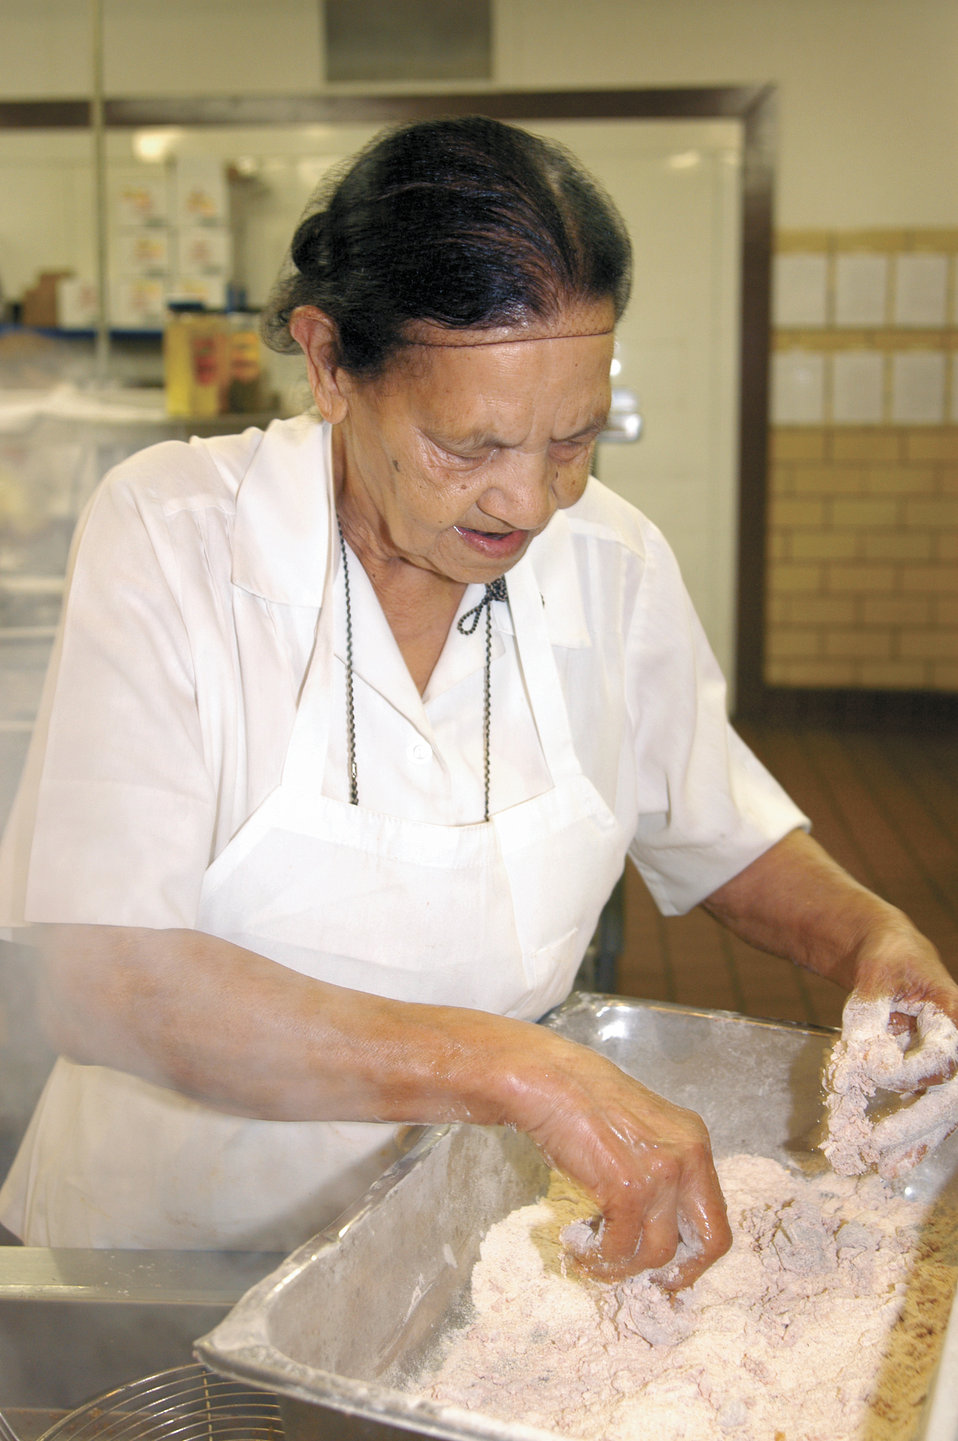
Cook still going strong after 50-plus years of service

TINKER AIR FORCE BASE, Okla. -- Minnie Jones prepares chicken livers for the fryer in the base restaurant here. The veteran employee, who began working at Tinker as a cooking assistant in 1954, is now one of two cooks at the facility.